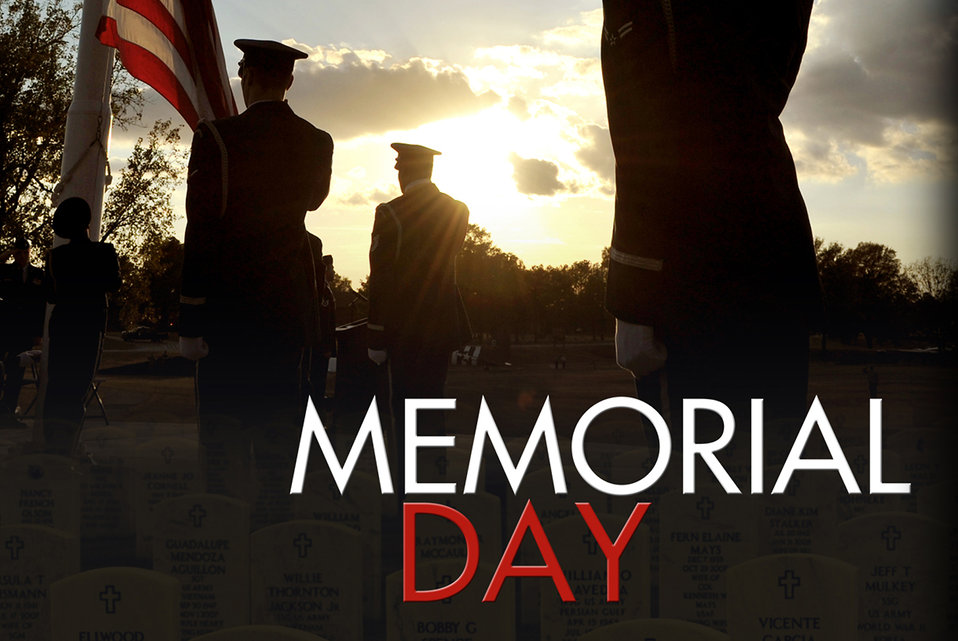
Memorial Day 2011